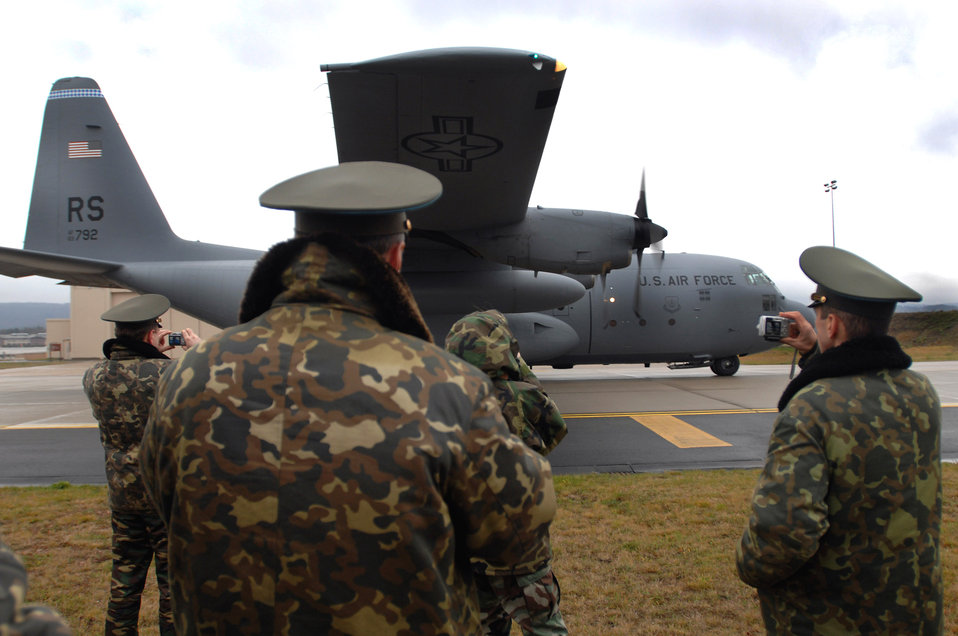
Russians, Americans team up in Germany

Russian air force officers take photos as a C-130 Hercules prepares for a combat offload demonstration Dec. 5 at Ramstein Air Base, Germany. The demonstration illustrated one of the many C-130 capabilities for transporting cargo. The Russian air force members visited to plan a United States/Russia exercise demonstrating theater security cooperation among the U.S. Air Forces in Europe and Russian federation air force personnel.